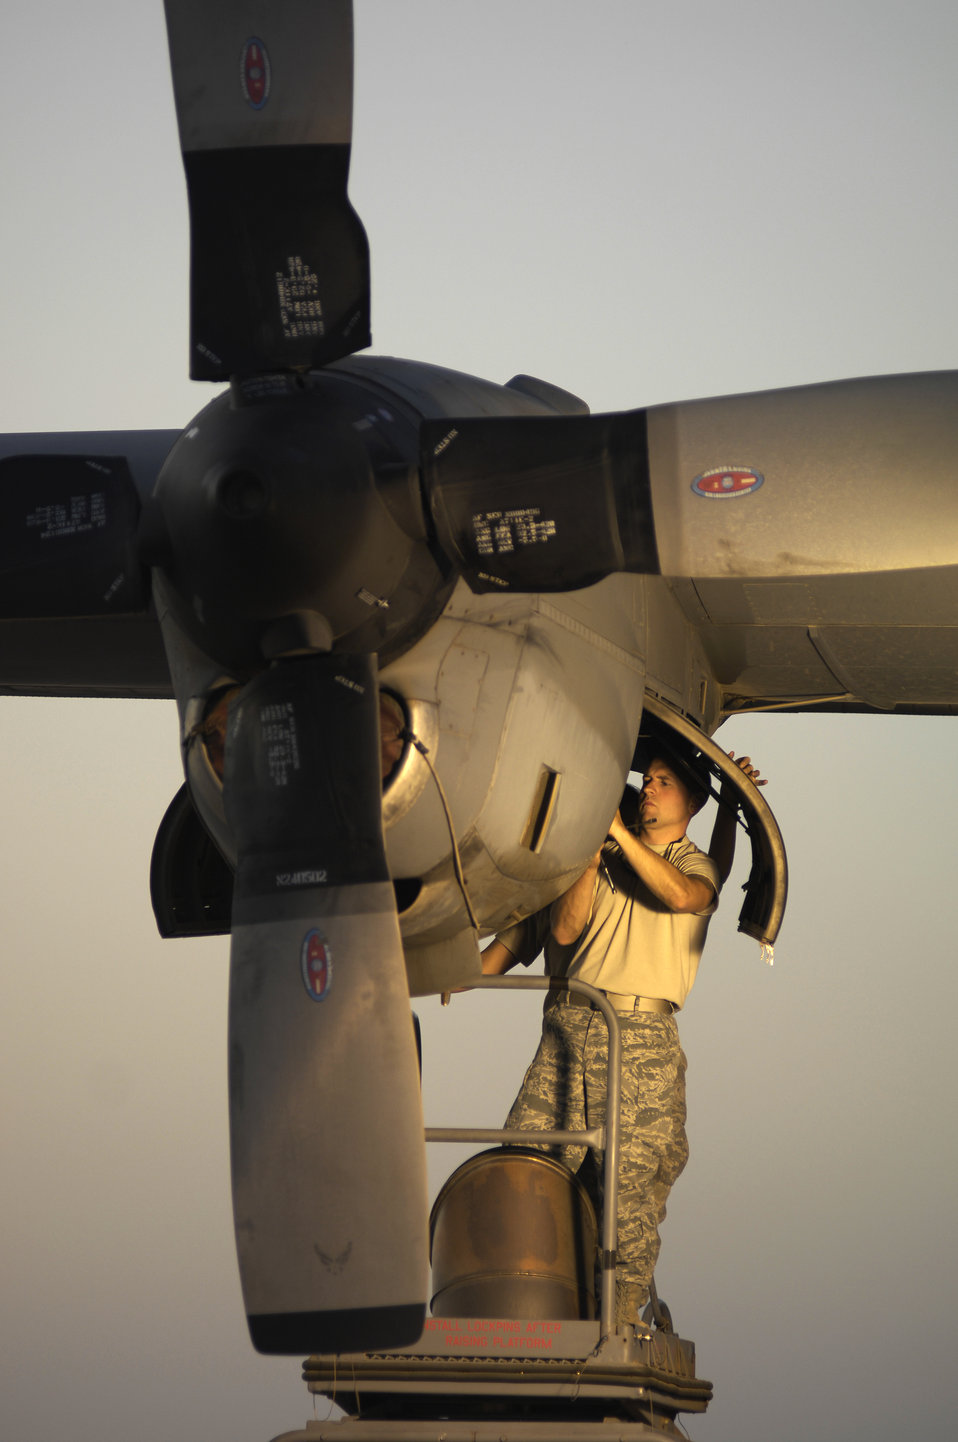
Let's scope this out

Tech. Sgt. Zachary Michalski uses a borescope to inspect an engine turbine of a C-130 Hercules at Contingency Operating Base Speicher, Iraq, Nov. 11, 2009. Sergeant Michalski is assigned to the 164th Expeditionary Air Squadron, 25th Combat Air Battalion,